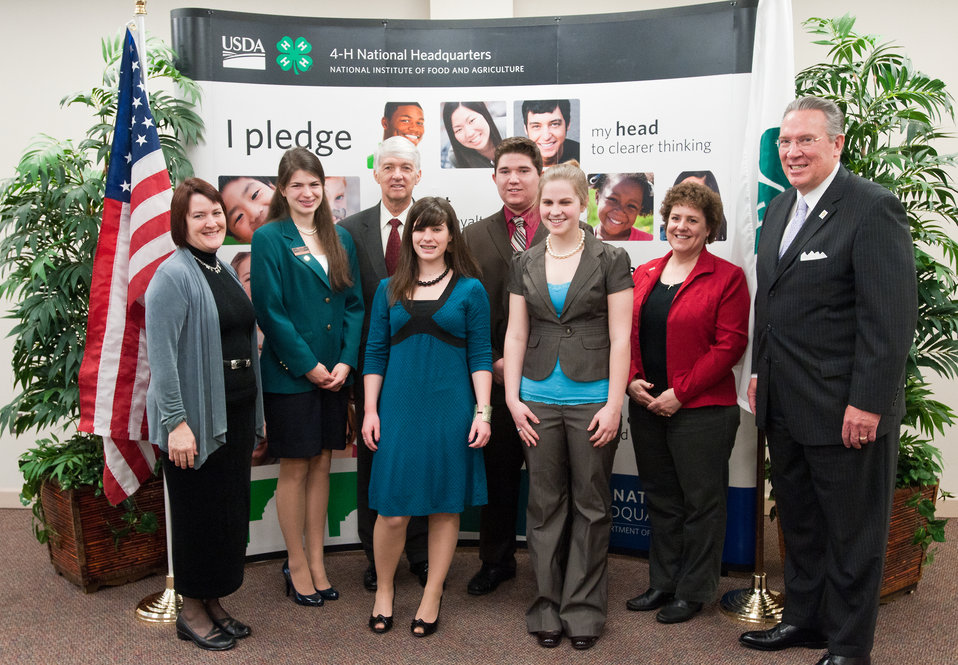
U.S. Department of Agriculture's (USDA) National Institute of Food and Agriculture Representatives with the National 4-H Conference Operations Team on Tuesday, April 5, 2011 in Washington, DC. The conference is the premier youth development opportunity of the USDA.